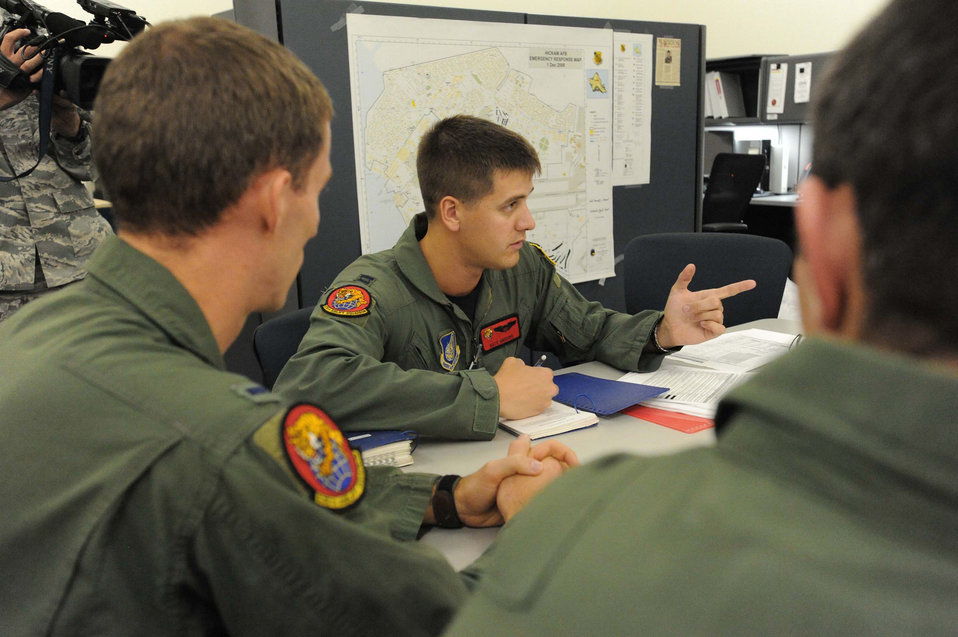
humanitarian mission to Japan

U.S. Air Force Capt. Nate Amidon, a 535th Airlift Squadron pilot, conducts a pre-flight crew briefing at Joint Base Pearl Harbor-Hickam, Hawaii, before departing on a humanitarian mission to Japan on March 12, 2011. The aircrew will fly to various Air Force bases in Japan during its mission to provide support for Japan relief efforts in the wake of tsunami and earthquake damage there.